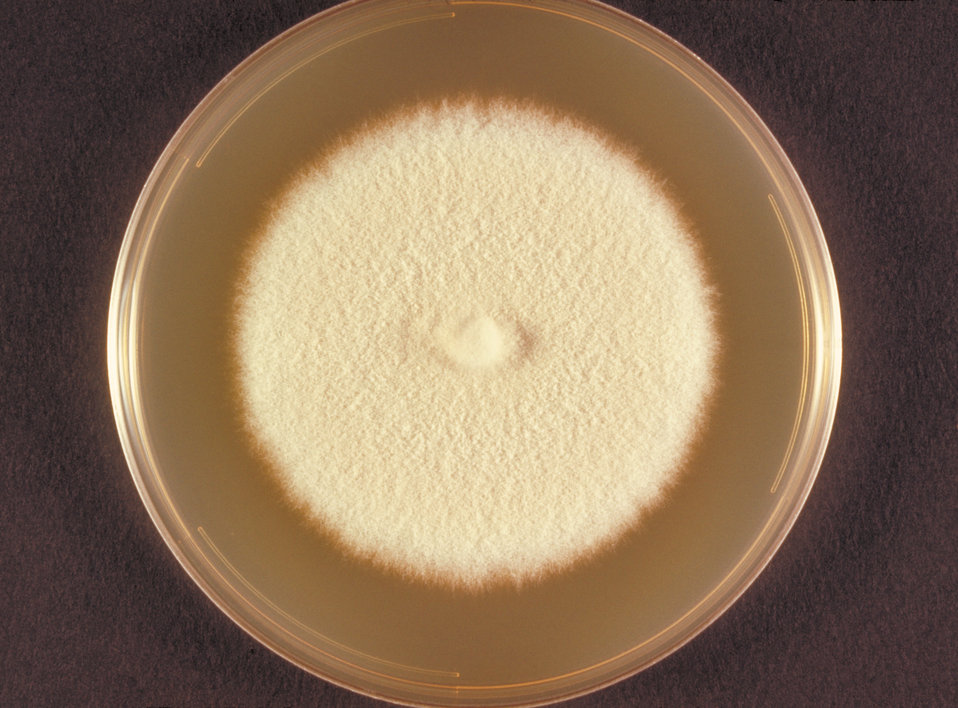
This is the top view of a Sabouraud's dextrose plate culture growing the fungus Microsporum persicolor.